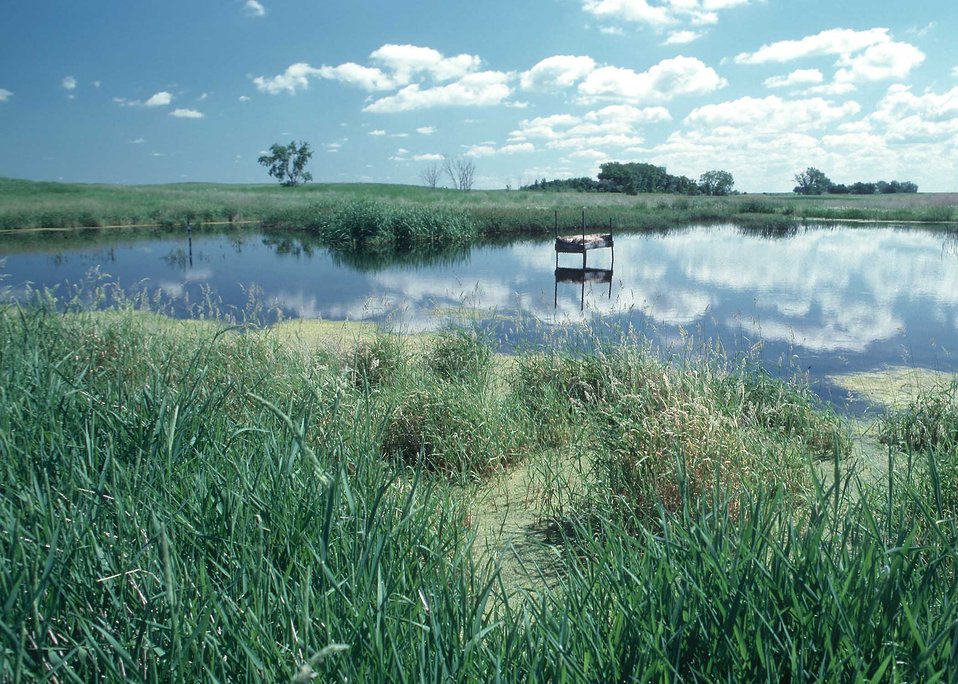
Prarie potholes provide an abundance of vital habitat for wildlife. The structure in this wetland provides a nesting area for Canadian geese.